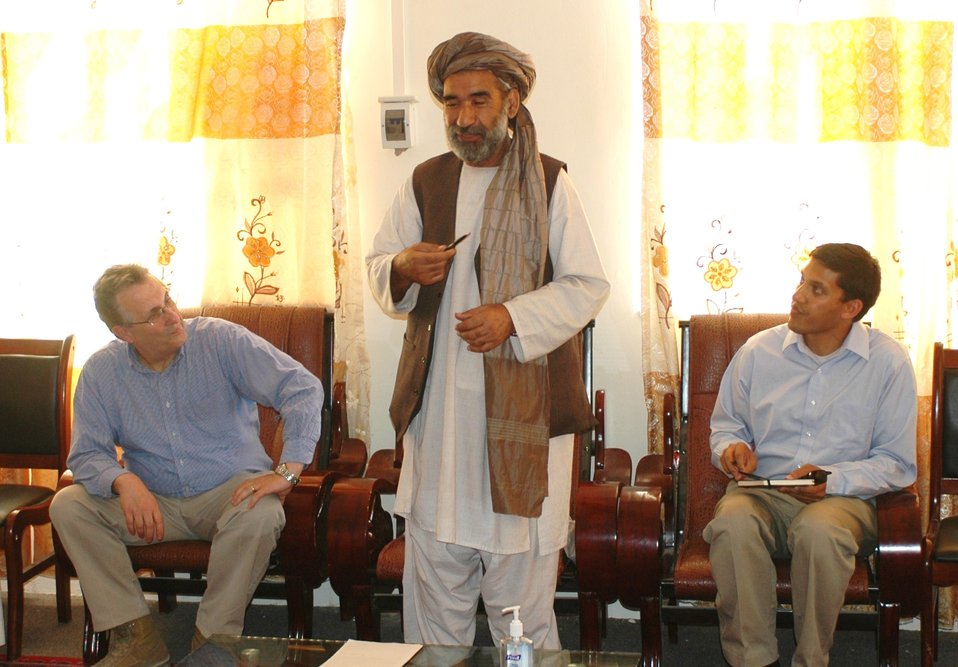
Dr Shah Visits Argandab April 10, 2010